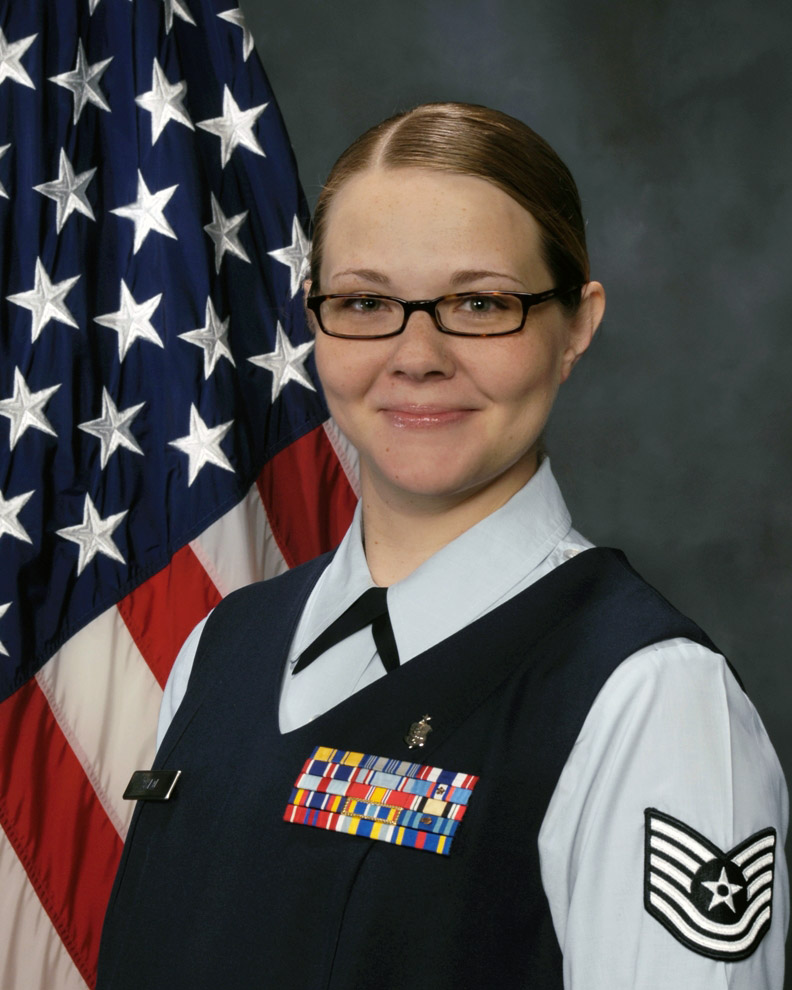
Air Force officials honor 12 Outstanding Airmen of the Year

Tech. Sgt. Tammy Shaw of Wright-Patterson Air Force Base, Ohio, is one of the 12 Outstanding Airmen for 2008.